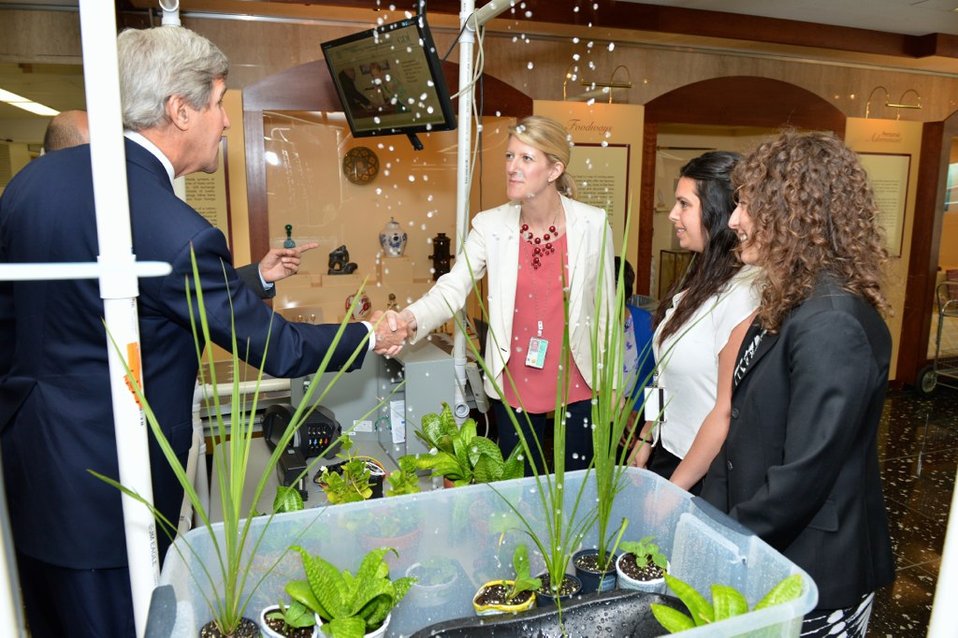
Secretary Kerry Visits the Earth Day Expo

U.S. Secretary of State John Kerry visits the Earth Day Expo at the U.S. Department of State in Washington, D.C., on April 22, 2014.